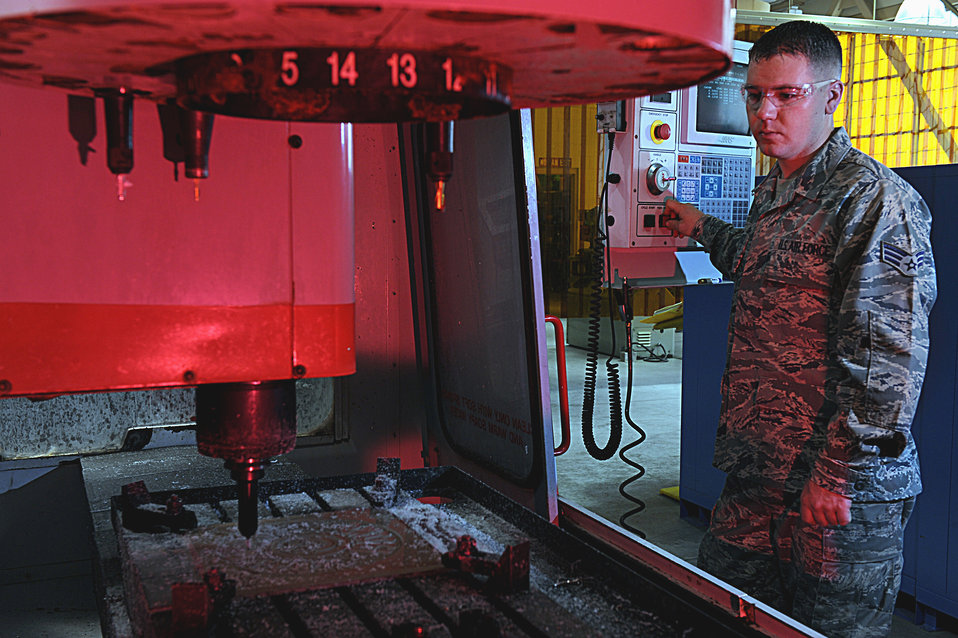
Hot spot at Nellis

Senior Airman Chad Mattingly programs a metal template into the computer numeric control April 16 at Nellis Air Force Base, Nev. The 57th CMS uses machines like the CNC to make structural repairs to components for various aircraft.